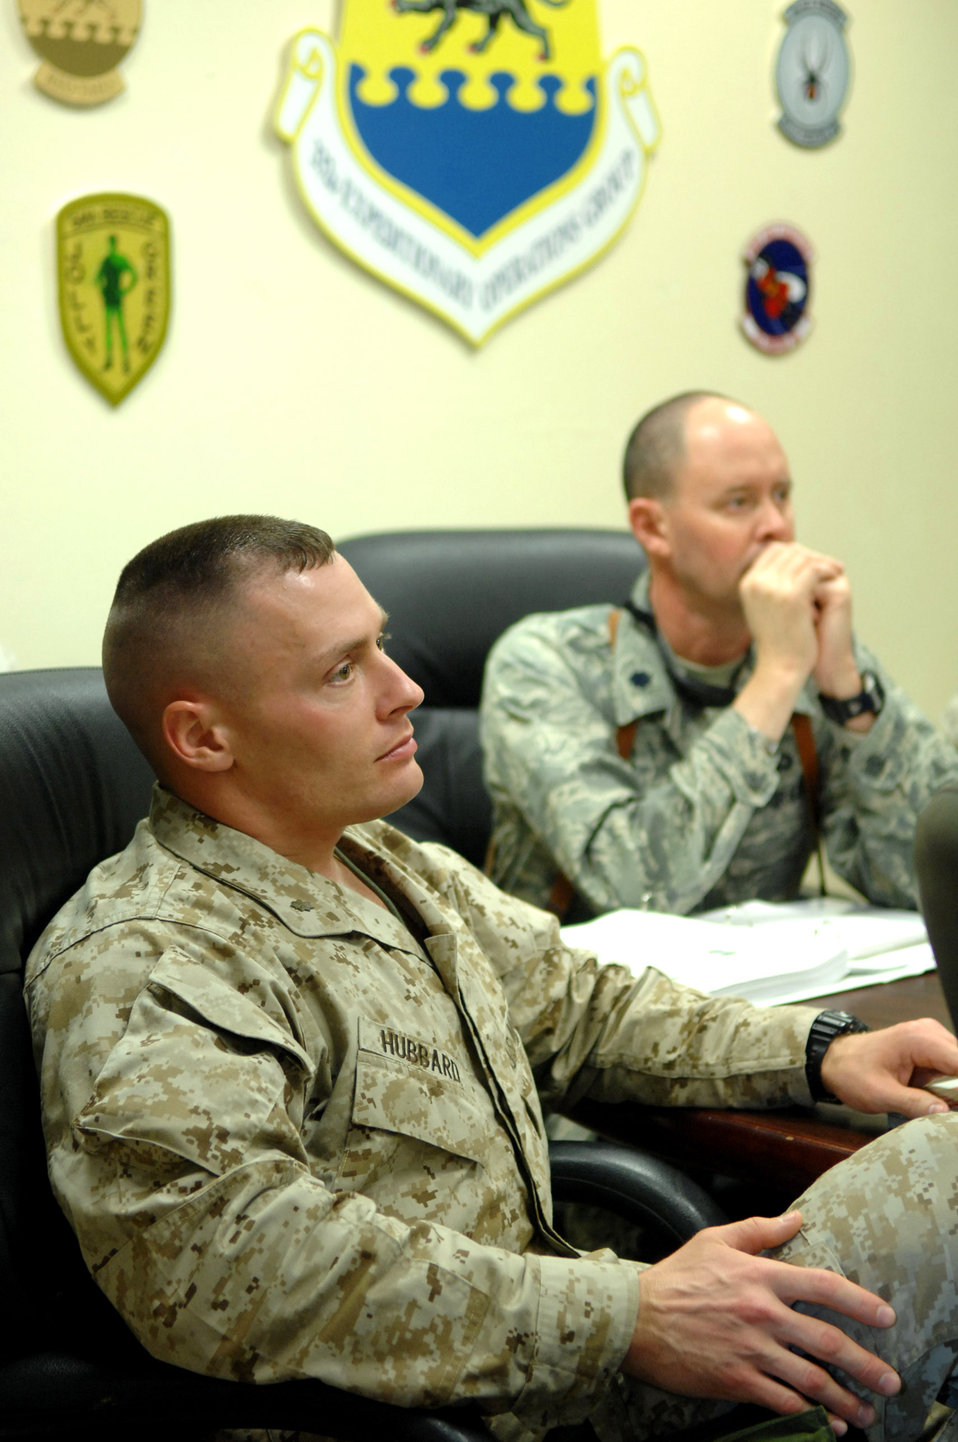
Airmen, Marines seek to integrate, synchronize in skies over Iraq

Lt. Col. Robert Ricker and Maj. Robert Hubbard listen to briefings about the importance of working together with sister service units to coordinate joint utilization of airspace here, Feb. 10. Colonel Ricker is the 332nd Expeditionary Operations Support Squadron airfield operations flight commander. Major Hubbard is the Direct Air Support Center operations chief.